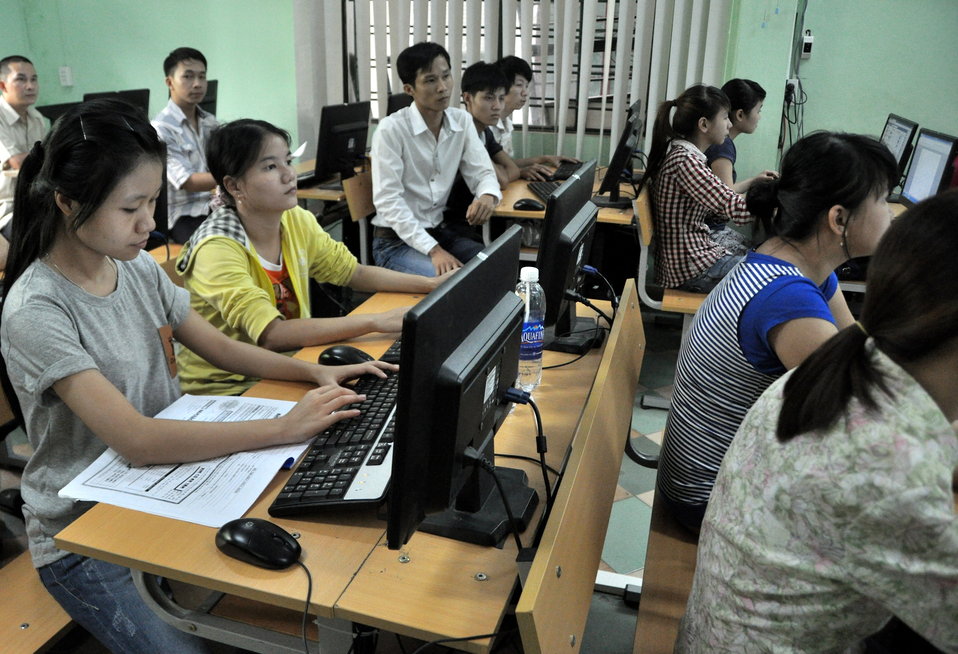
USAID Visits IT Training Program for People with Disabilities at Dong A University

Danang, Vietnam
July 17, 2013